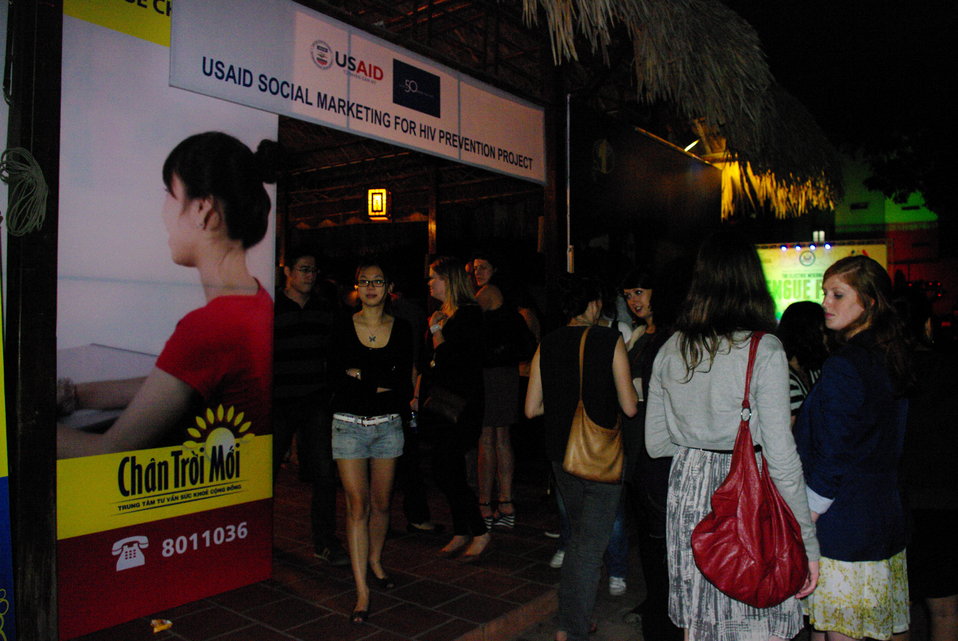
PEPFAR, U.S. Embassy Host Dengue Fever Concert in Hanoi